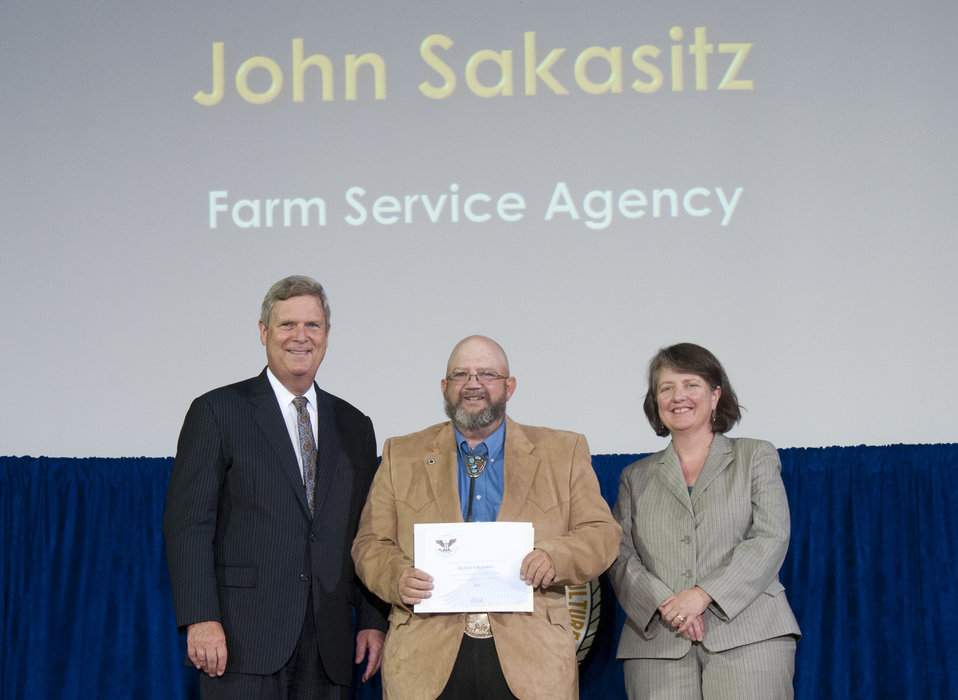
Agriculture Secretary Tom Vilsack and Agriculture Deputy Secretary Kathleen Merrigan present the President’s Volunteer Service Award to Farm Service Agency (FSA) employee John Sakasitz at the U.S. Department of Agriculture (USDA) 64th Annual Honor Awards Ceremony in Washington, D.C. on Wednesday, Sept. 12, 2012. The President’s Call to Service Award is presented to an employee who has served 4,000 hours or more of service with a qualifying organization over the employee’s lifetime.